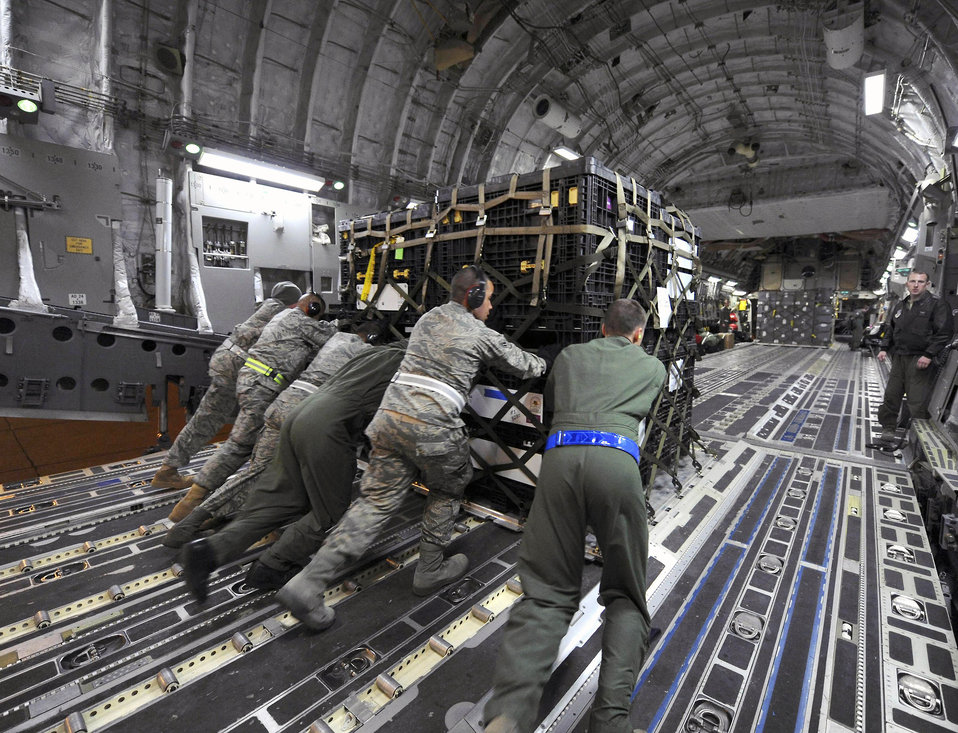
Japan tsunami relief

U.S. Air Force airmen load a pallet onto a U.S. Air Force C-17A Globemaster III at March Air Reserve Base, Calif., on March 12, 2011. The supplies are en route to Japan for earthquake relief efforts.